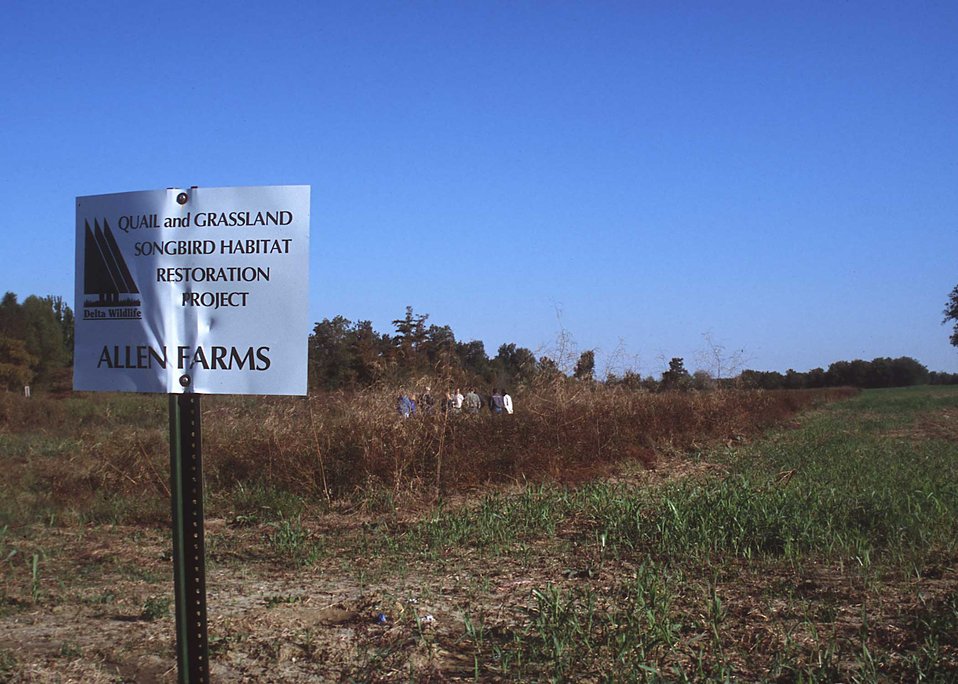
Partnership efforts help landowners restore wildlife habitat.